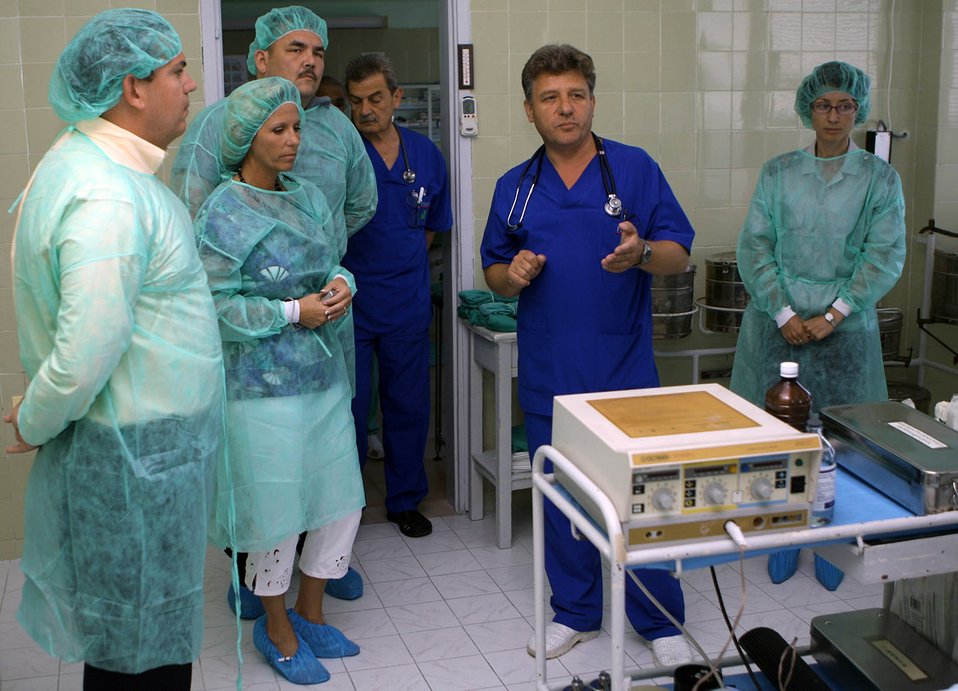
Airmen donate medical equipment to Bulgarian hospital

Dr. Stefan Lazarov (second from right) gives a tour of the children's ward to Chaplain (Maj.) Vincent Cummings, Senior Master Sgt. Honey Lane and Tech. Sgt. Errol Johnson June 23 at a hospital in Plovdiv, Bulgaria. Approximately 200 Airmen Homestead Air Reserve Base, Fla., deployed to train with the Bulgarian air force. The Airmen raised $2,800 to purchase a medical device for the children's ward that is useful for patients with respiratory or cardiac problems. Dr. Lazarov is from the Medical University in Plovdiv, Bulgaria. Chaplain Cummings is a 482nd Fighter Wing chaplain, Sergeant Lane is the 93rd Fighter Squadron first sergeant and Sergeant Johnson is a 93rd FS aerospace medical technician.